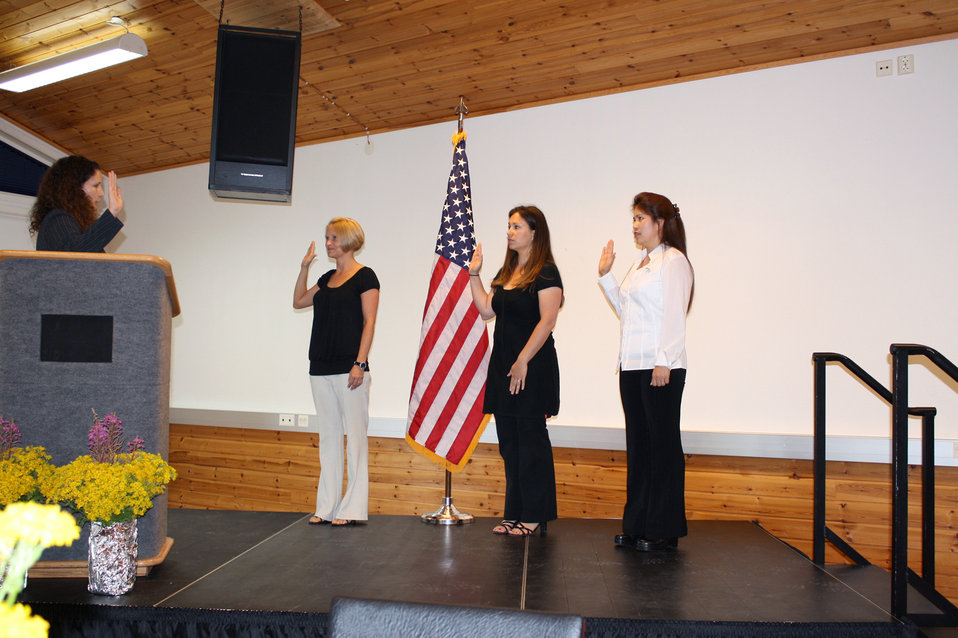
Citizens

Three U.S. military spouses gained U.S. citizenship Aug. 19, 2010 during a naturalization services ceremony in Stavanger, Norway. Andrea Rodriguez-Sanchez, Rowena Jarman and Cornelia Jude are accompanying their spouses at the NATO Joint Warfare Center and the 426th Air Base Squadron.